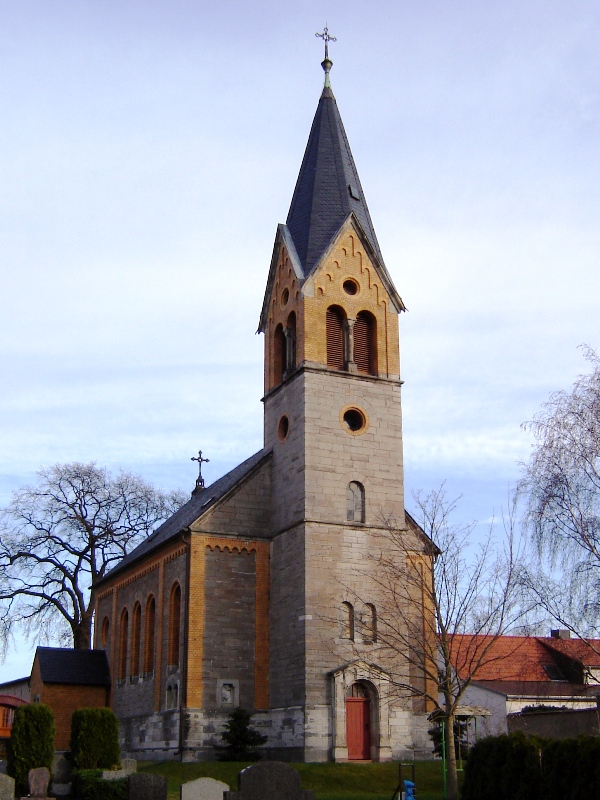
Deutsch: Kirche in Magdeburg-Calenberge